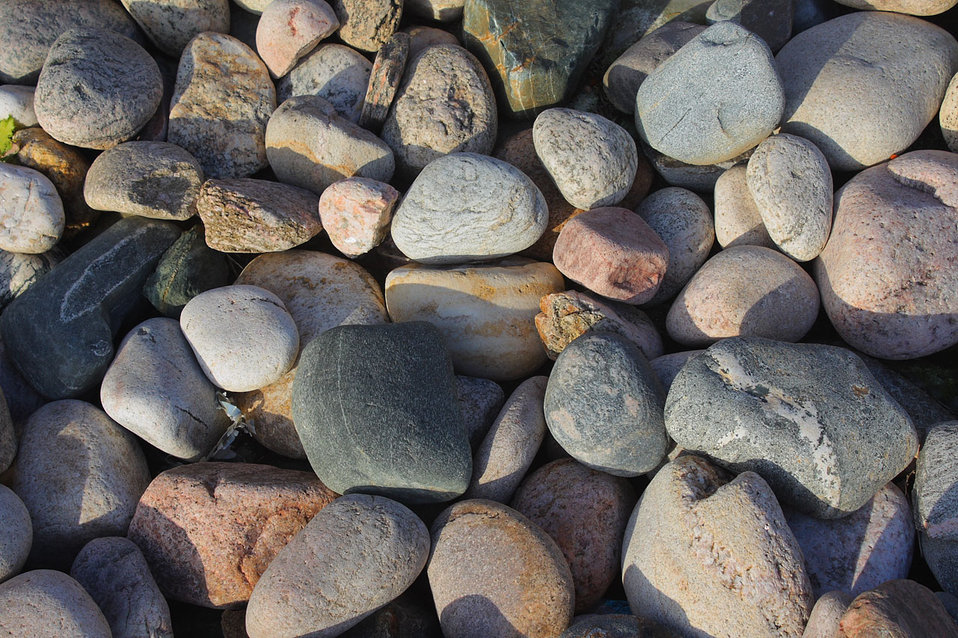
Assorted loose round stones

Loose round stones of various colors.